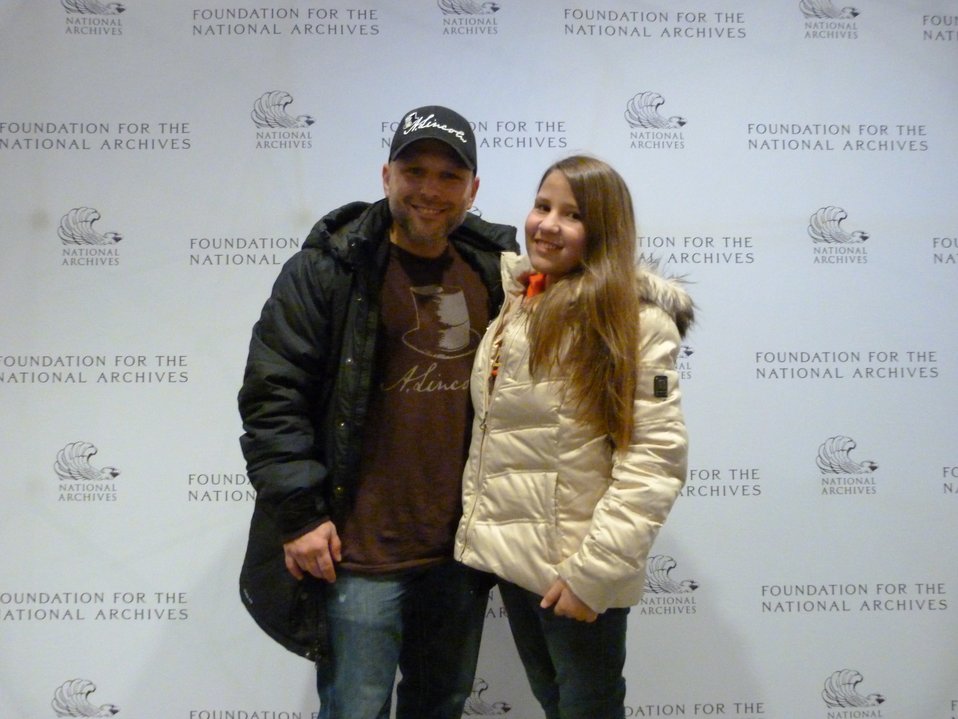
Rotunda Sleepover

Rotunda Sleepoverr; Photo provided by The Foundation for the National Archives